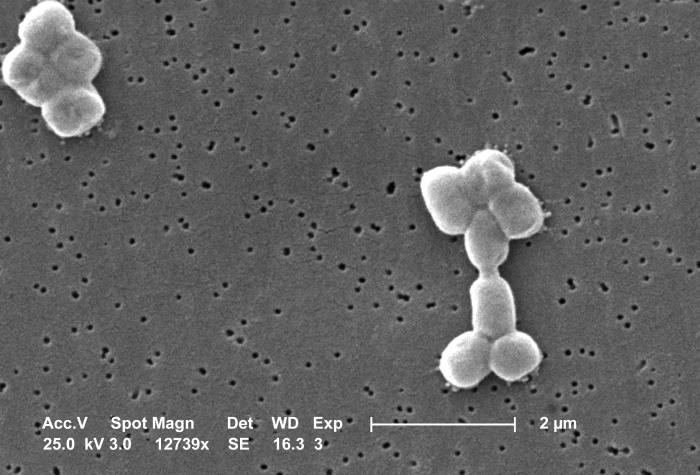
This SEM depicts a couple of clusters of aerobic Gram-negative, non-motile Acinetobacter baumannii bacteria as seen under a magnification of 12,739x. See PHIL 10094 for a colorized version of this image.